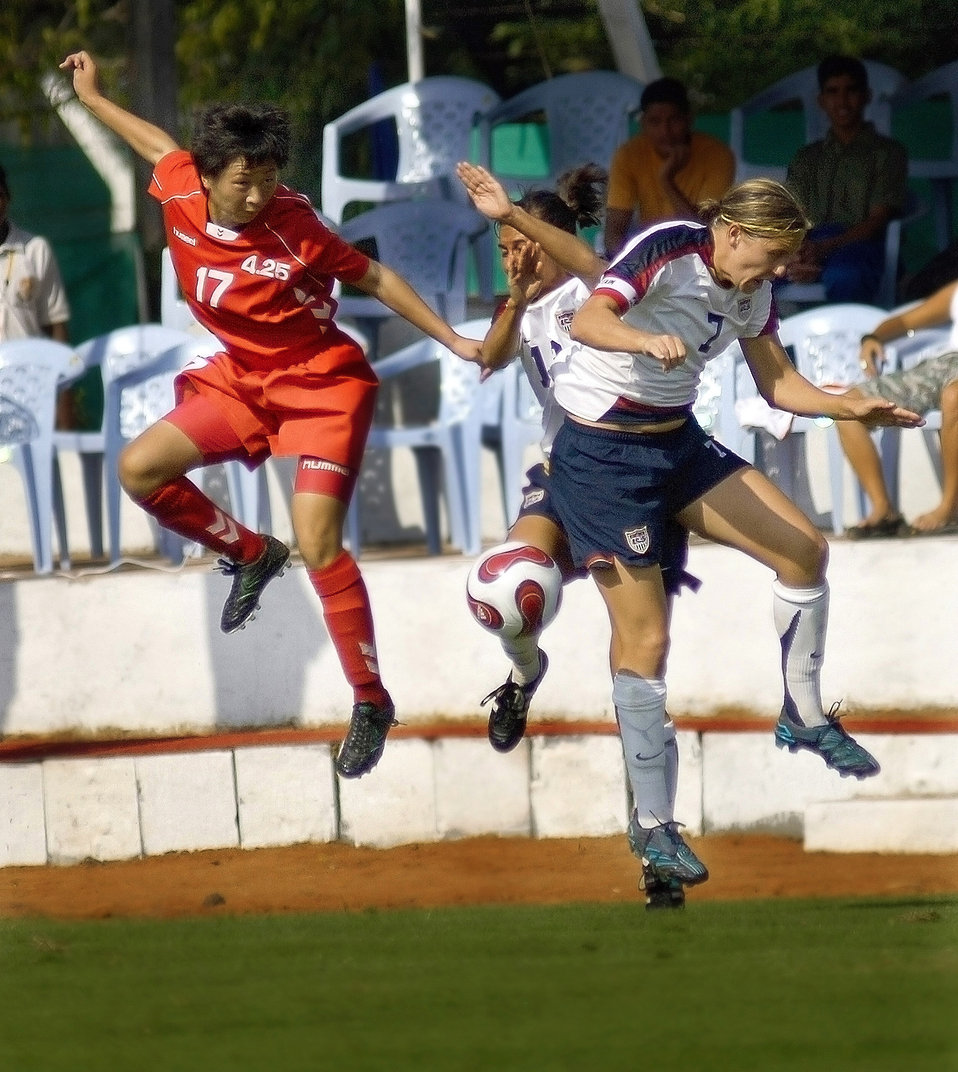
Heads up

Ill Ok Jang from South Korea, U.S. Army Capt. Emily Nay and U.S. Air Force Capt. Wendy Emminger all scramble for the soccer ball during an Oct. 14 soccer match at the Military World Games in Hyderabad, India. South Korea defeated the U.S. team, 4-0.